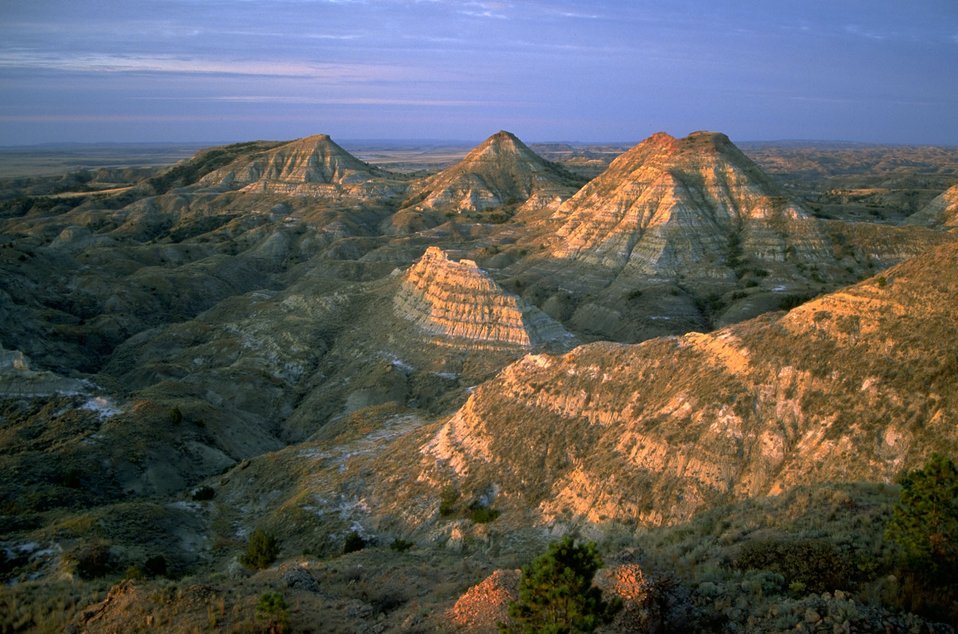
Sun shining on the Terry Badlands